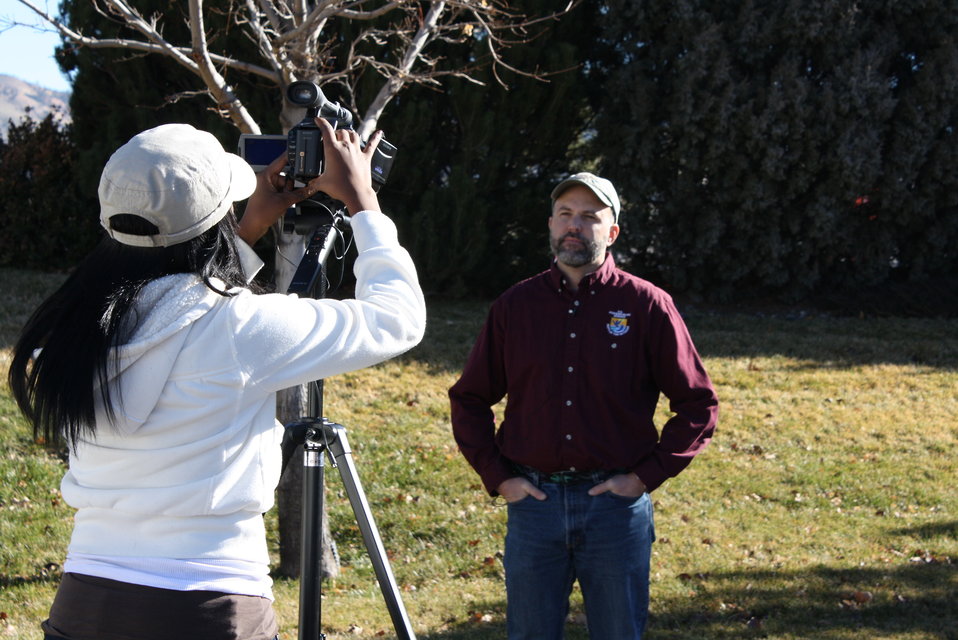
Interviewing a biologist

Student Kanisha Allen interviews biologist Roy Averill-Murray for a short film she is working on about desert tortoise recovery.